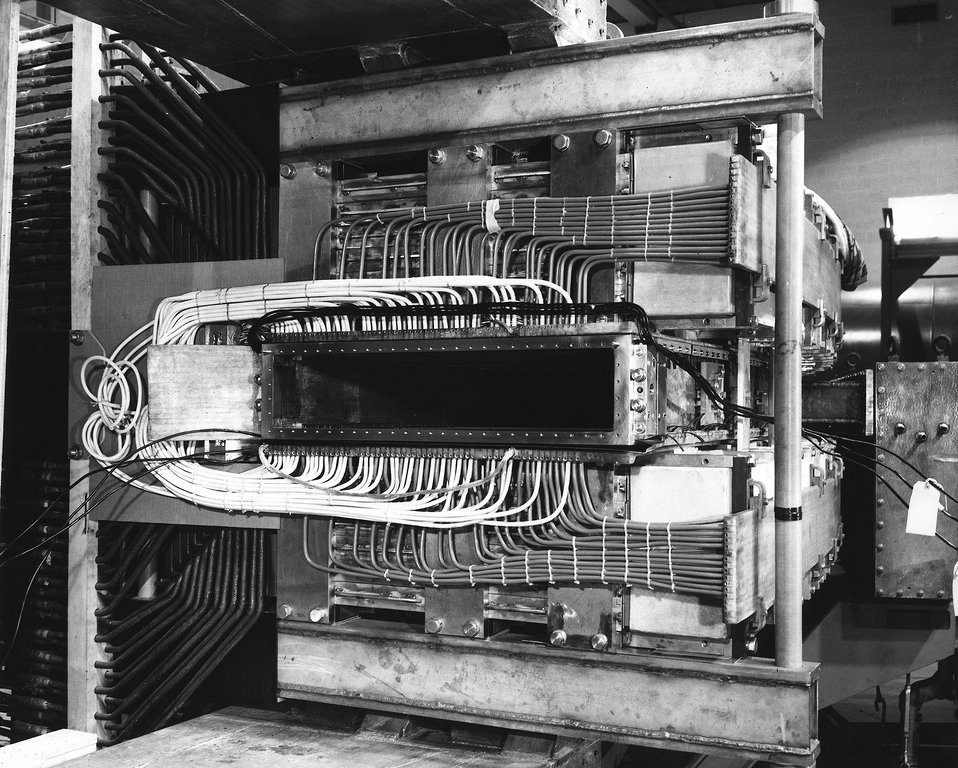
A view of the end of quadrant IV from the north straight section showing pole face winding connections. c. 1951